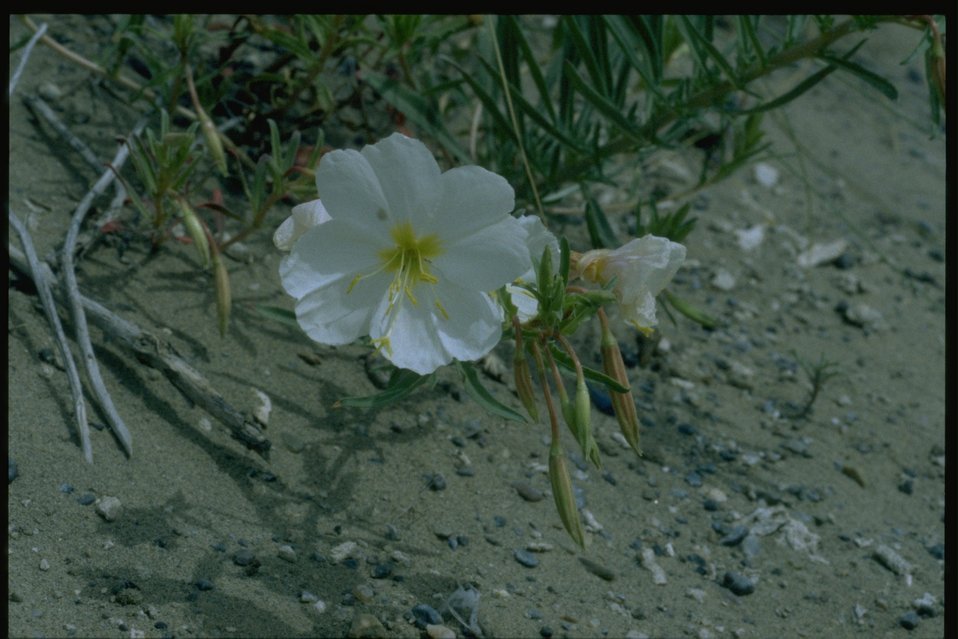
Closeup shot of Primrose wildflower.